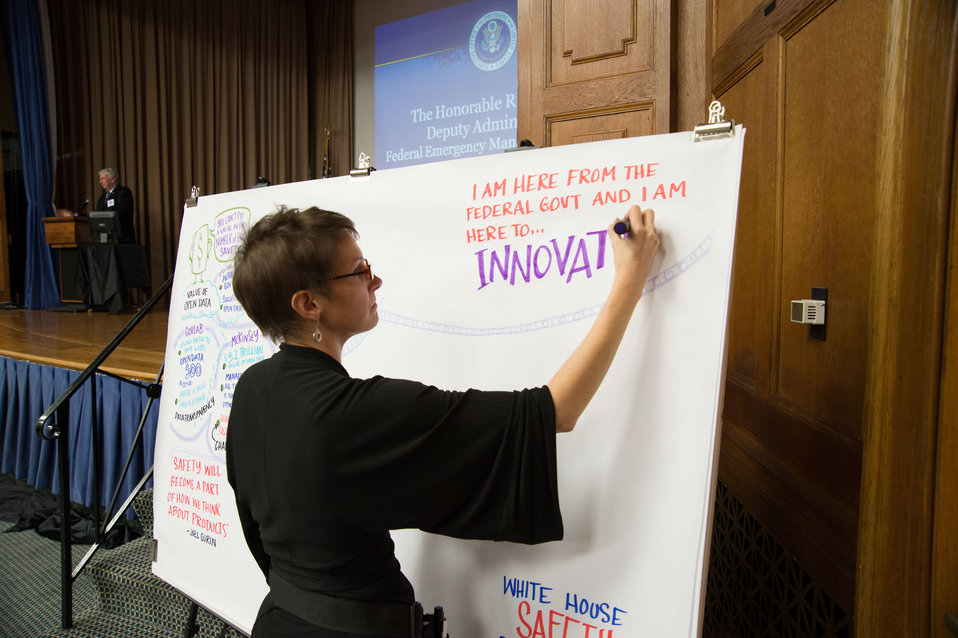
The White House Office of Science and Technology Policy, the White House Office of Public Engagement, the U.S. Department of Transportation, and the U.S. Department of Agriculture (USDA) host the second annual “Safety Datapalooza,” in the Jefferson Auditorium at USDA in Washington, D.C. on Tuesday, Jan. 14, 2014. The “Safety Datapalooza,” highlights innovators from the private, nonprofit, and academic sectors who have used freely available government data to build products, services, and apps that advance public safety in creative and powerful ways. This year’s meeting features new safety data resources in the areas of transportation, food, occupational and consumer product safety tools to improve disaster preparedness and emergency response. A series of panel discussions and brainstorming sessions are being held in which attendees will have the opportunity to discuss how technology and open data are being used to address public safety challenges across America.